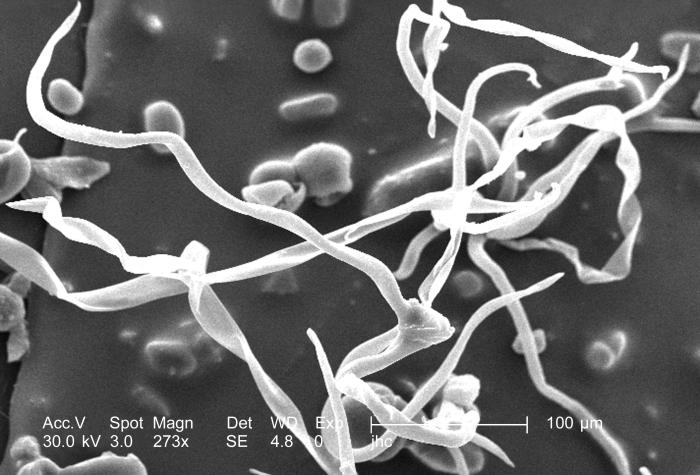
Magnified 273x, this scanning electron micrograph (SEM) revealed the presence of a coating of debris adhered to the ventral surface of an unidentified lizard's head region, which had been found deceased on the grounds of the Decatur, Georgia suburbs. Note the myriad of what proved to be unidentified pollen grains, and unknown parasitic mites. For the full complement of images related to this specimen see PHIL 8803 through 8816, which includes highly magnified views of a Nanorchestes sp. mite found coincidentally on this repitiles skin.